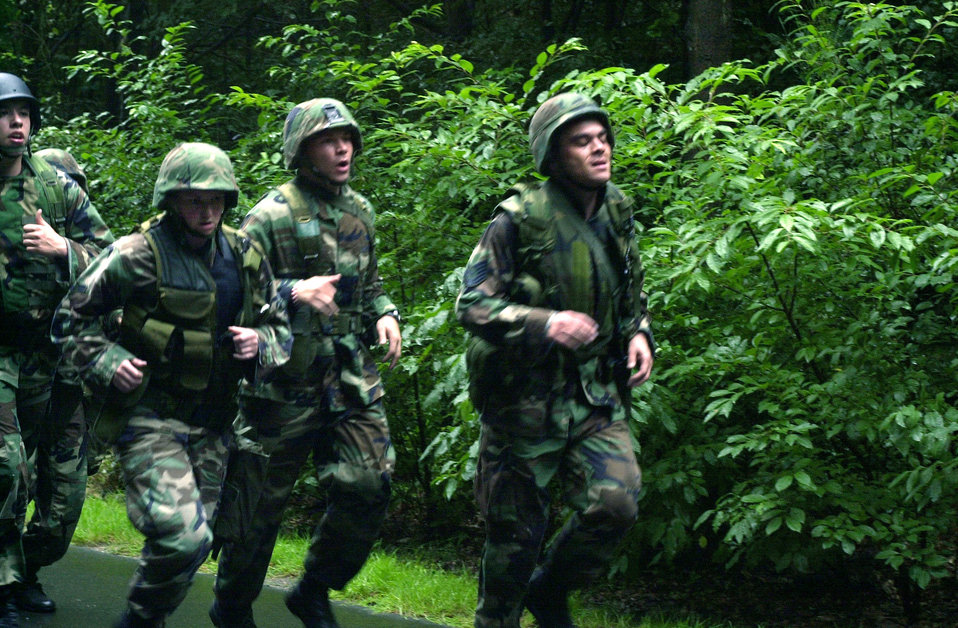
Up to the challenge

VOGELWEH AIR BASE, Germany - Airmen run a three-mile course in full gear while competing for a position on the U.S. Air Forces in Europe 2004 Defender Challenge team here Aug. 24. The Air Force-wide competition determines the